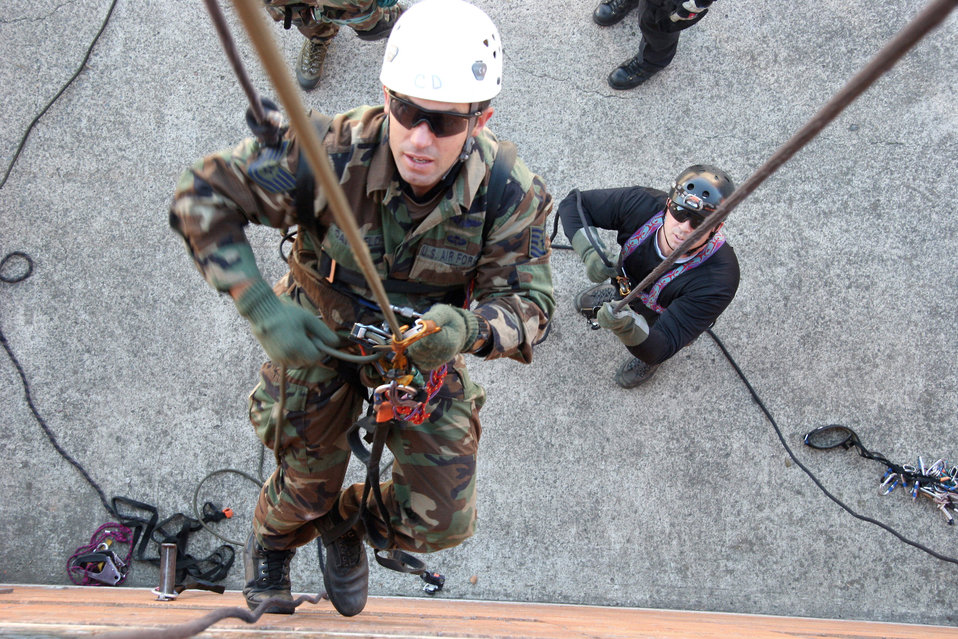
Practice makes perfect

Tech. Sgt. Andrew Canfield ascends a fire department training tower during a rescue certification course. Sergeant Canfield is a pararescueman with the 304th Rescue Squadron from the Portland Air National Guard Base, Ore.